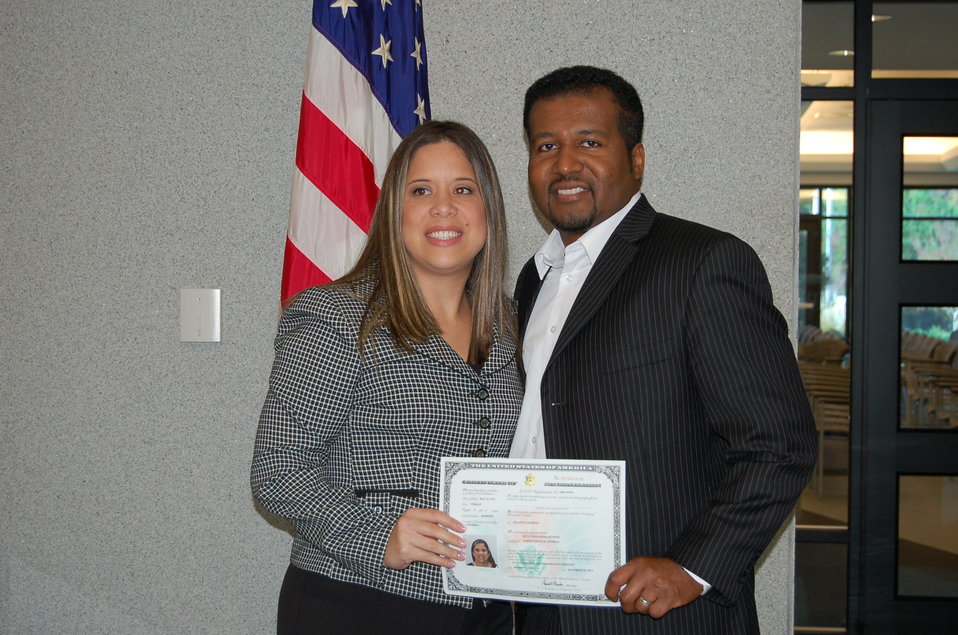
New Citizens